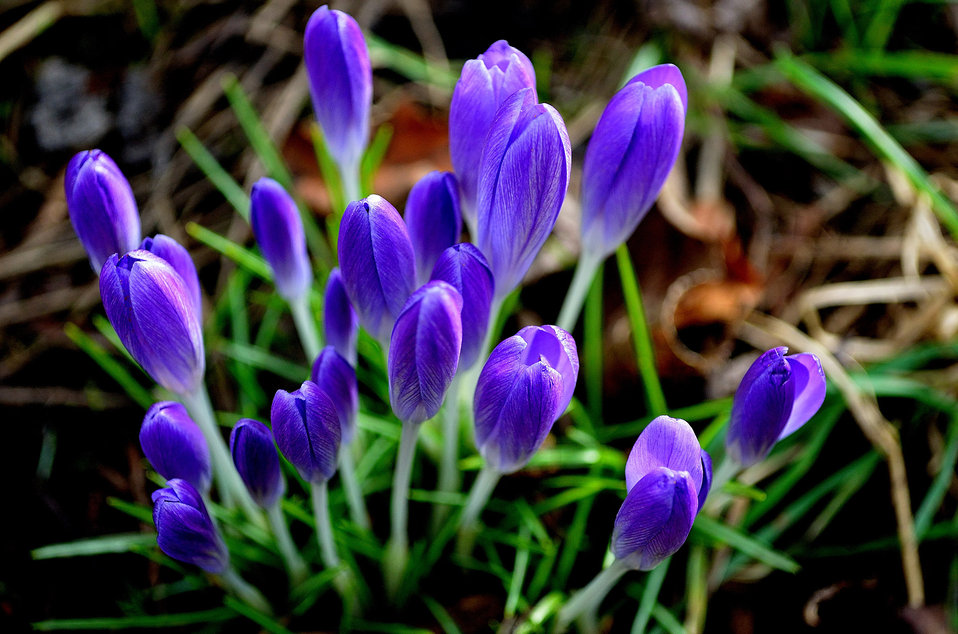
Nice flowers.